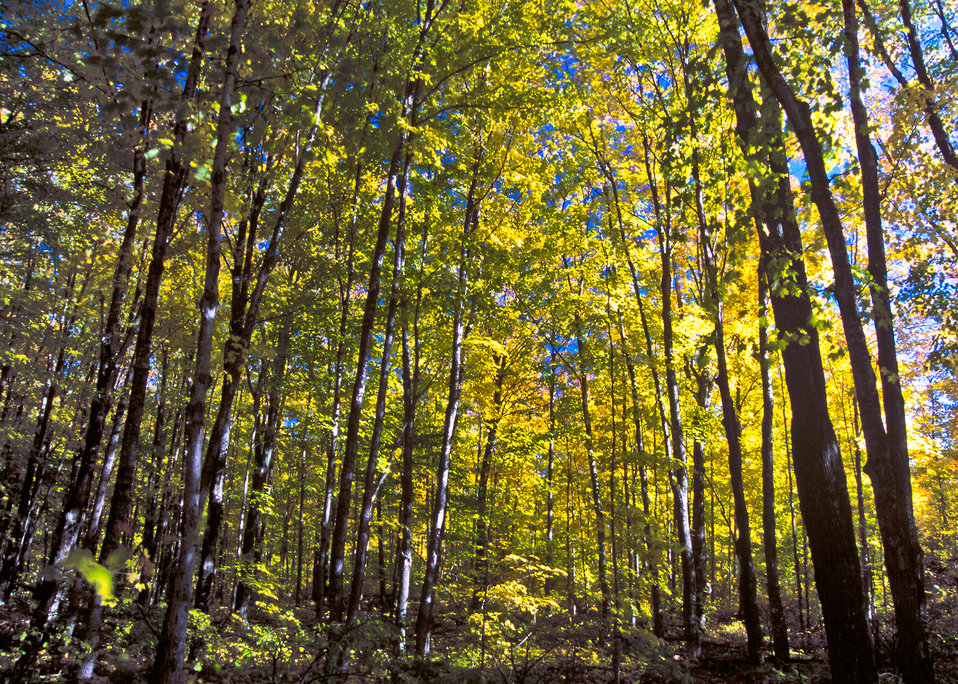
Nature’s color abounds in the Hiawatha National Forest on the Upper Peninsula of Michigan during the fall. In the National Forests of the United States. The beauty and sights are endless.